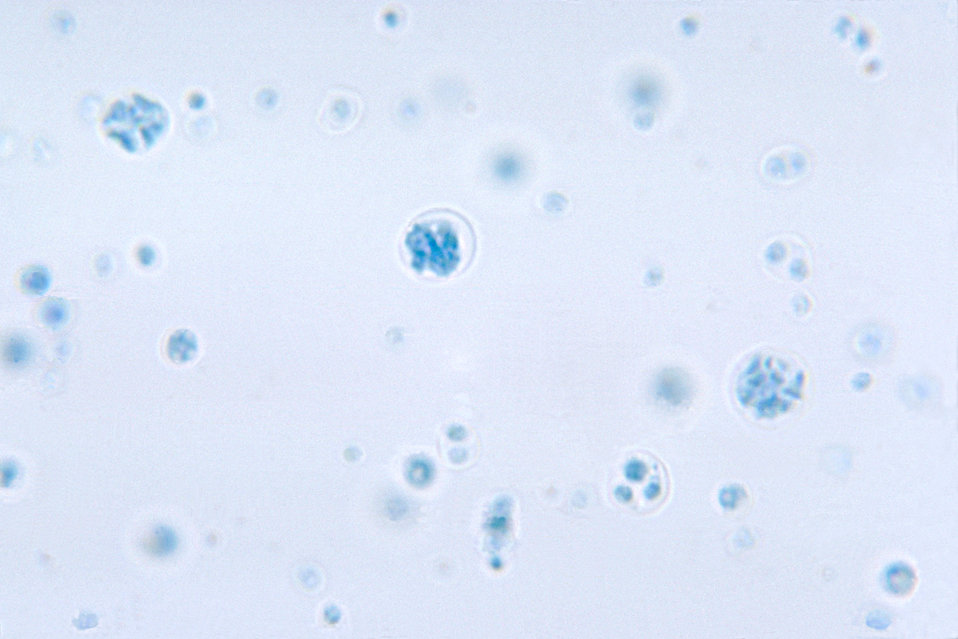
This photomicrograph depicts the presence of Prototheca wickerhamii using a lactophenol cotton blue mount technique.